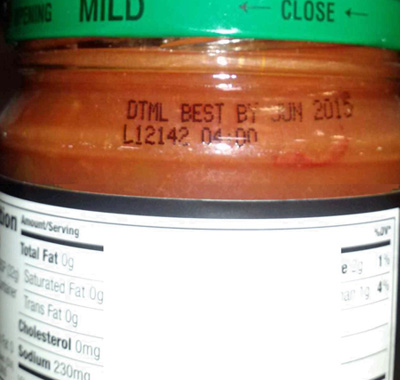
RECALLED – Salsa

July 22, 2013 – Product Recall – Olam Tomato Processors, Inc. Announces Voluntary Recall of Mild and Medium Chunky Salsa Because It May Contain Large Glass Pieces.